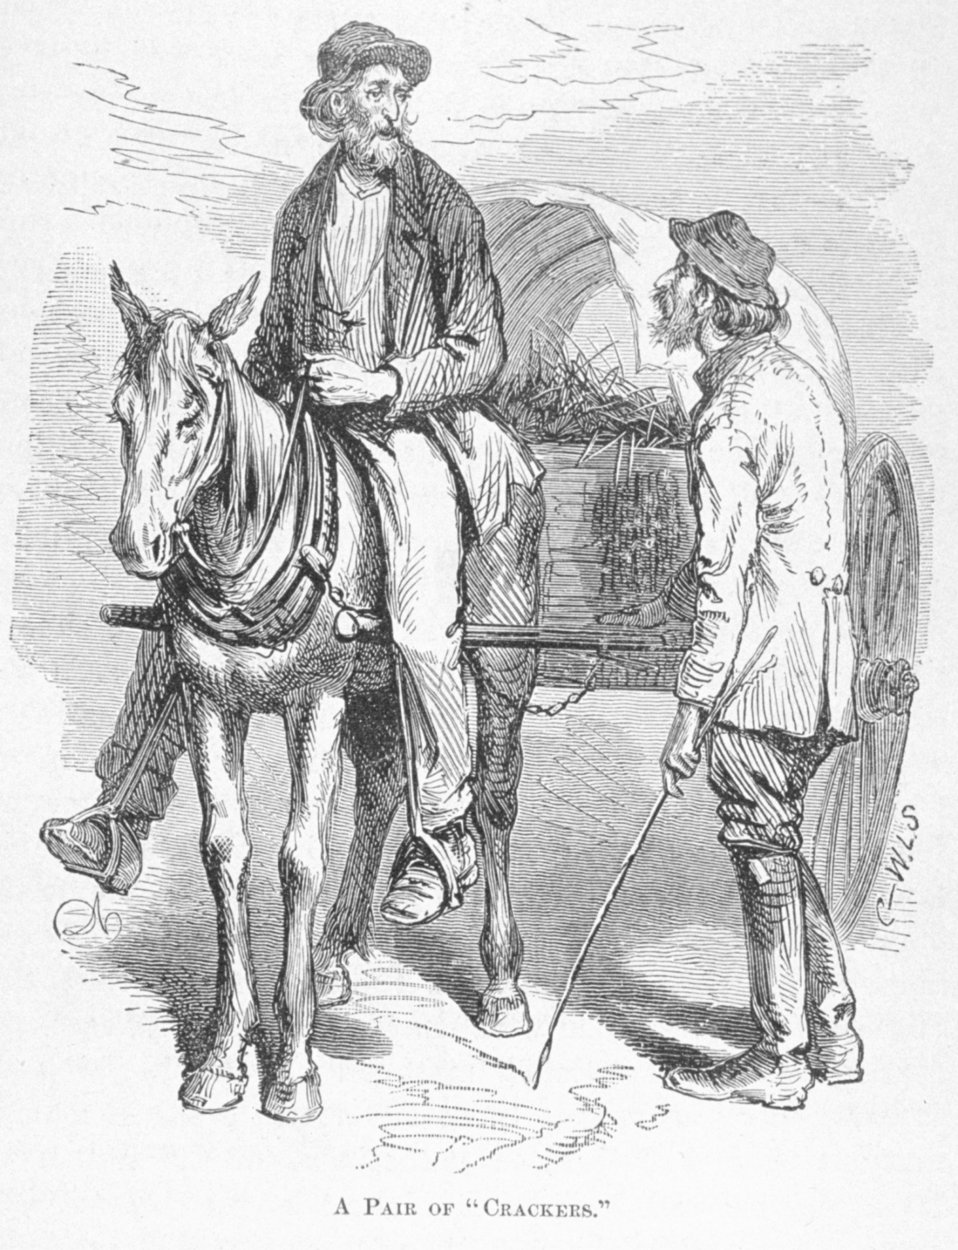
A Pair of 'Crackers' - in 'Florida for Tourists, Invalids, and Settlers' by George M. Barbour, 1881. Library Call No. F316 .B23 1881.